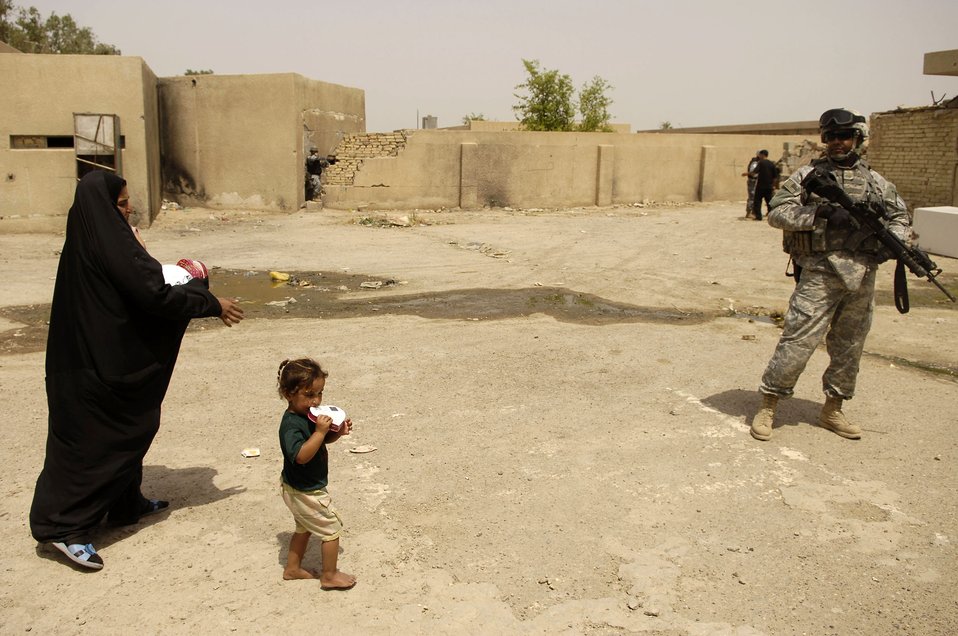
Gifts for the tender hearts

An Iraqi mother and child walk together after receiving chocolate May 24 from the Iraqi National Police in Al Furat, Iraq. During a recent humanitarian mission, U.S. servicemembers worked with the Iraqi police to distribute school supplies and toys to Iraqi children.